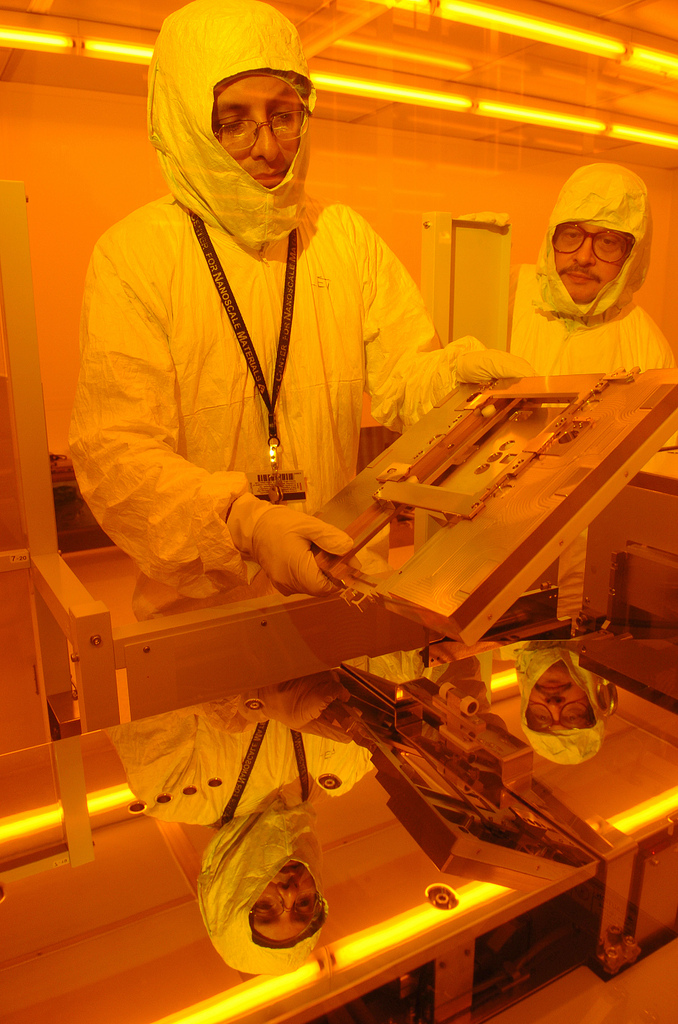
Derrick Mancini and Leo Ocola in Argonne's Center for Nanoscale Materials (CNM) Nanofabrication Cleanroom Facility.

Energy Science to provide tools and infrastructure for nanoscience and nanotechnology research fields that study the properties of materials measured in billionths of a meter.